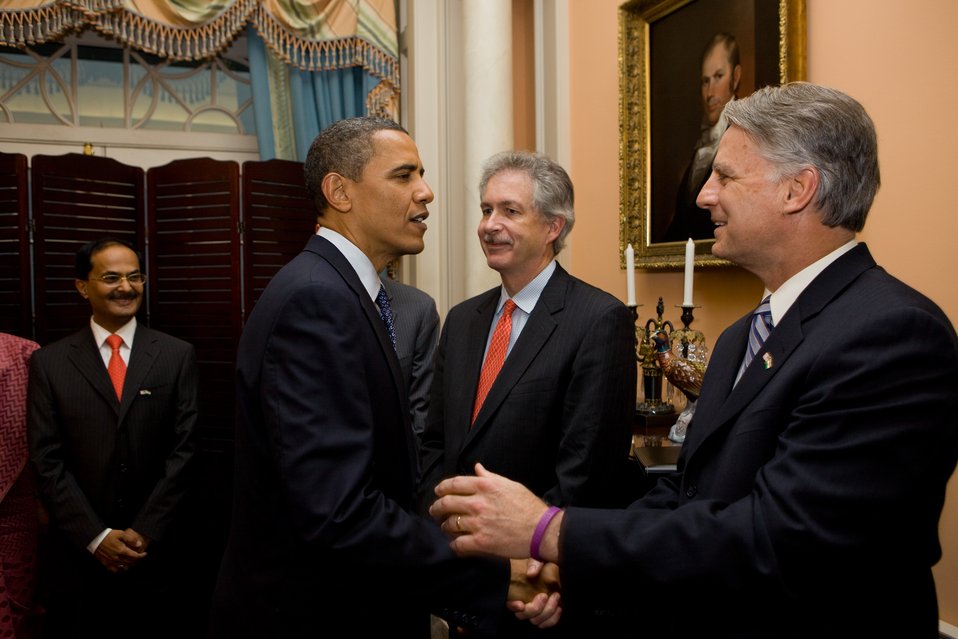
U.S. President Barack Obama Shakes Hands With Ambassador Roemer

U.S. Under Secretary for Political Affairs William J. Burns (center) looks on as U.S. President Barack Obama shakes hands with U.S. Ambassador to India Timothy J. Roemer at the U.S.-India Strategic Dialogue reception at the the U.S. Department of State in Washington, D.C., on June 3, 2010.